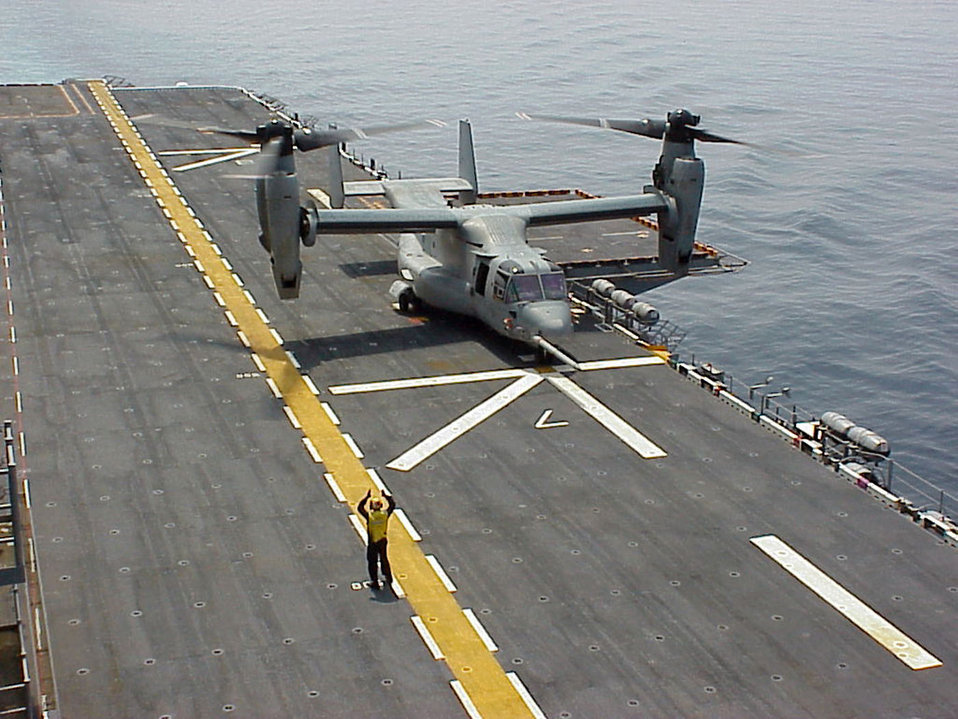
MV-22 Osprey

ON THE USS SAIPAN -- An MV-22 Osprey prepares to launch from the USS Saipan in the Atlantic Ocean. Maintainers from Edwards Air Force, Calif., deployed onboard the Navy ship for recent Osprey sea trials.